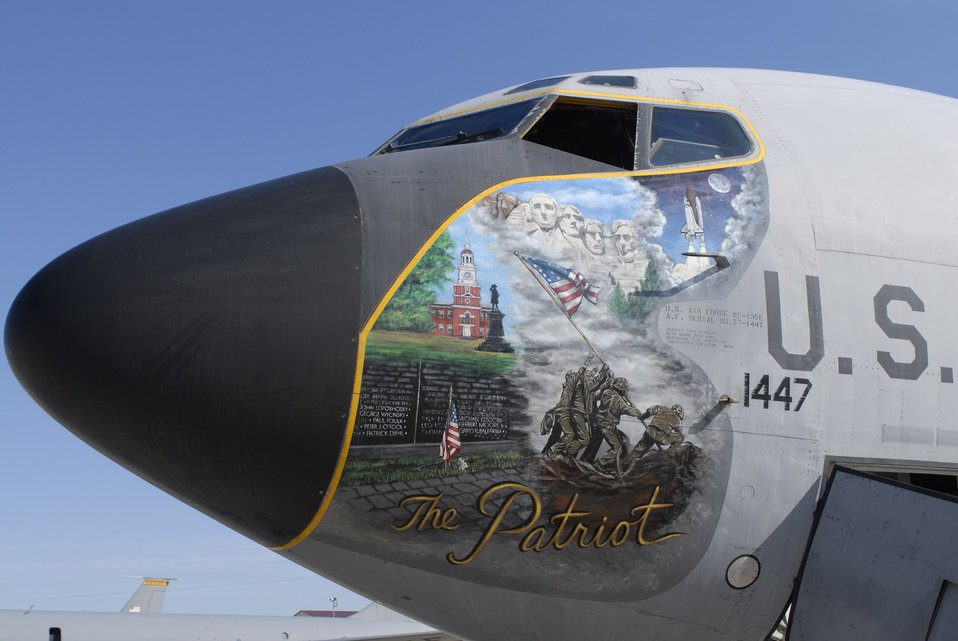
A nose for patriotism

An aging Iowa Air National Guard KC-135 Stratotanker, displaying patriotic nose art, is about to retire. The KC-135, assigned to the 185th Air Reserve Wing in Sioux City, was flown to Davis-Monthan Air Force Base, Ariz., where the aircraft will be officially retired.